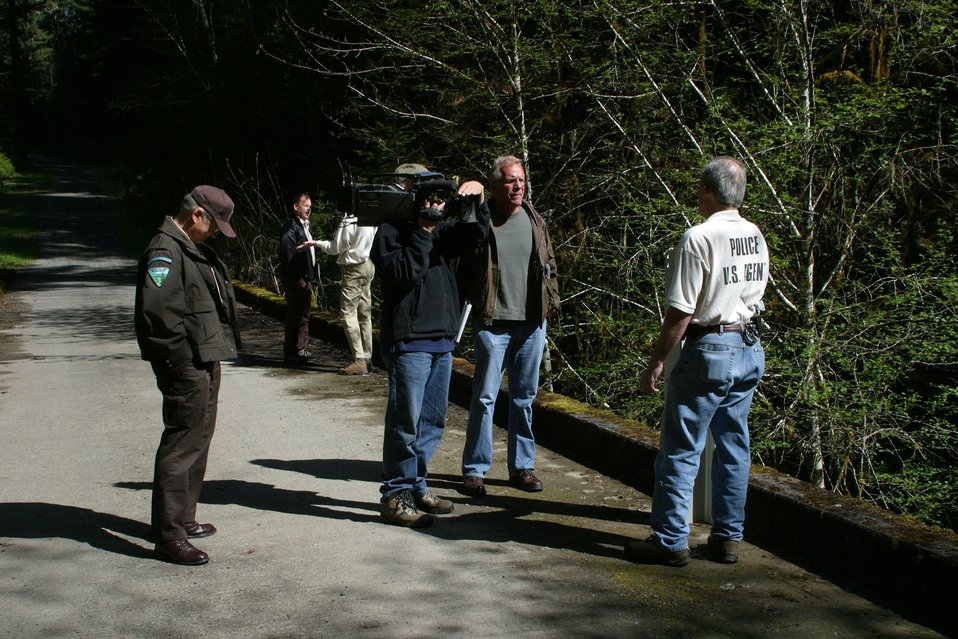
Craig Magill, BLM Special Agent in Charge talks with Jim Newman from OPB about theft on Public Lands as Dennis Daraghy, BLM Salem District Ranger looks on.